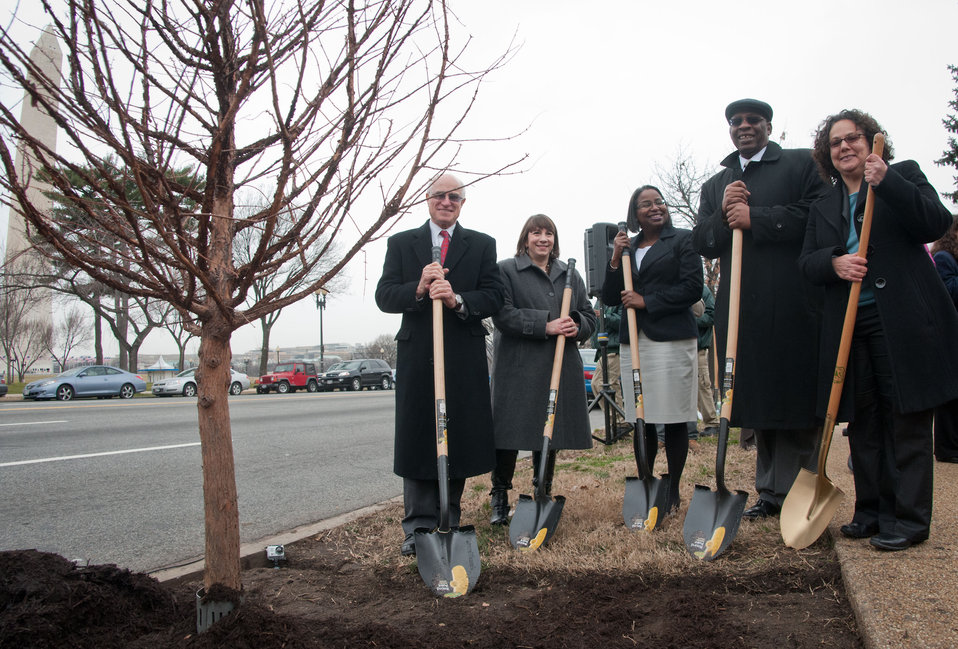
United States Department of Agriculture (USDA) Under Secretary Natural Resources and Environment Harris Sherman (left), District Department of Transportation Director Terry Bellamy (2nd from right), White House Council on Environmental Quality Chair Nancy Sutley (right) begin to apply a layer of mulch to the freshly planted Dawn Redwood for the Celebration of Tu B’Shevat “The New Year of the Trees” event on the District of Columbia western lawn next to the USDA Headquarters, Whitten Building at 14th Street and Independence Ave SW, Washington, D.C. on Wednesday, February 8, 2012.